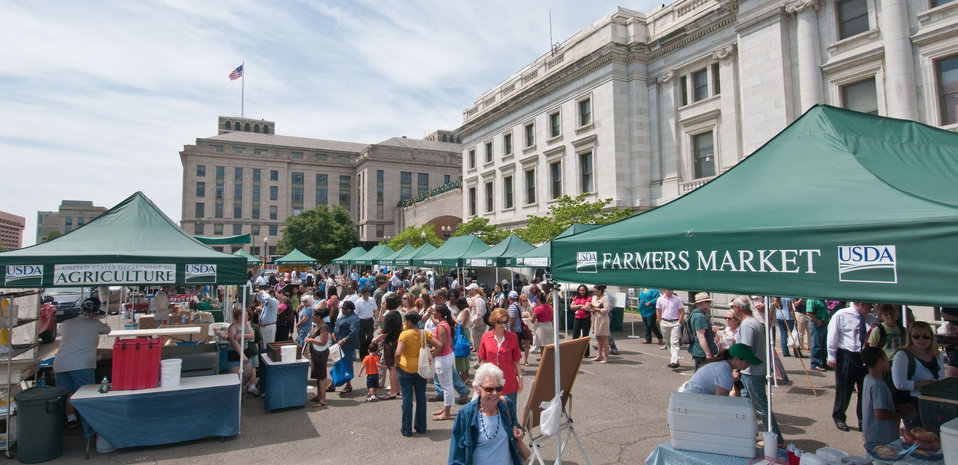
USDA Farmers Market on Friday, Jun 3, 2011 in Washington, DC. The USDA Farmers Market is located at the corner of 12th Street and Independence Avenue and will be open every Friday from 10:00 a.m. - 2:00 p.m. through November 18th. Special events will be happening every Friday at the market and at the adjacent People's Garden all season.